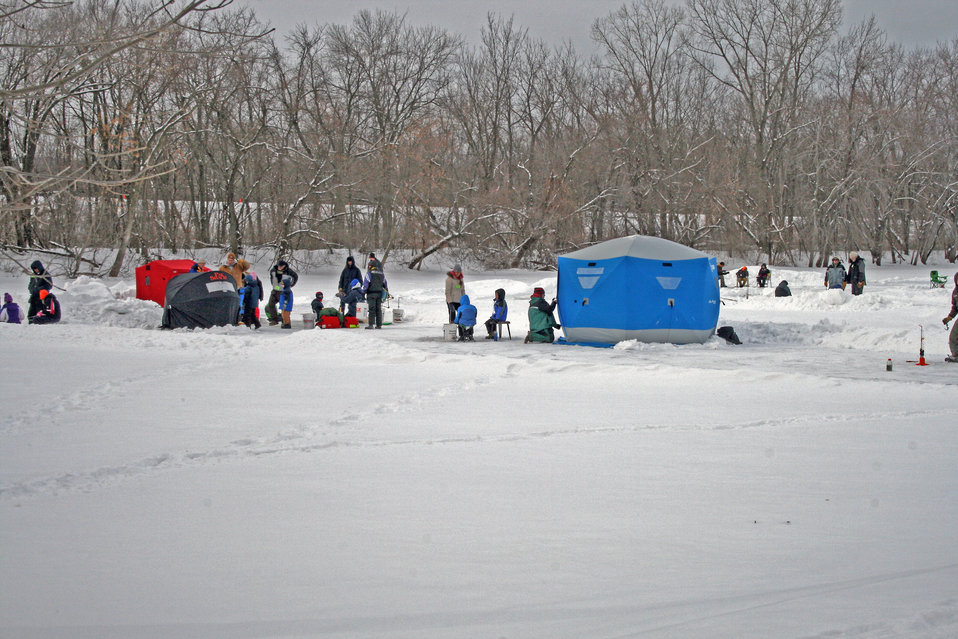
Ice Fishing

A look at some of the participants in the annual youth ice fishing event held on the Upper Mississippi River National Wildlife and Fish Refuge – Winona District.